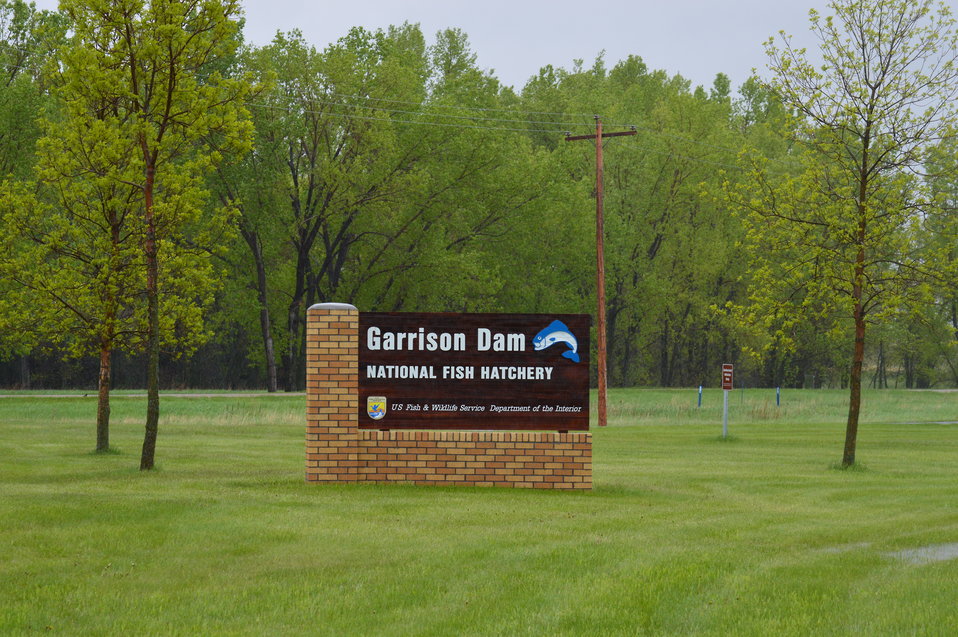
Garrison Dam NFH sign

Garrison Dam National Fish Hatchery in North Dakota.